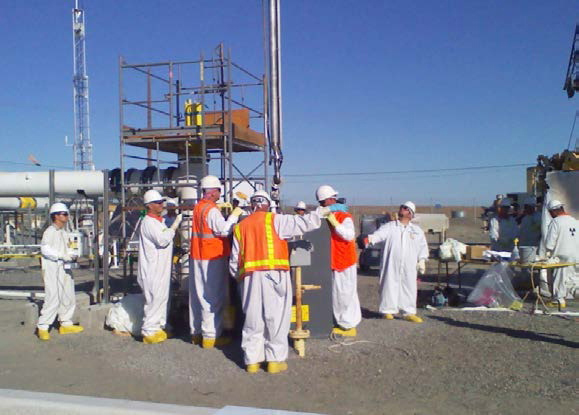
Sluicer Installed on Tank C-112

The Enhanced Reach Sluicer System (ERSS) was successfully installed in Tank C-112. The ERSS is a medium duty arm with a single high pressure articulated nozzle designed to provide a greater ability to direct sluicing media to tank waste. Installation of the sluicing pump, construction and operational testing are the next steps in the process. Retrieval operations will begin in October.